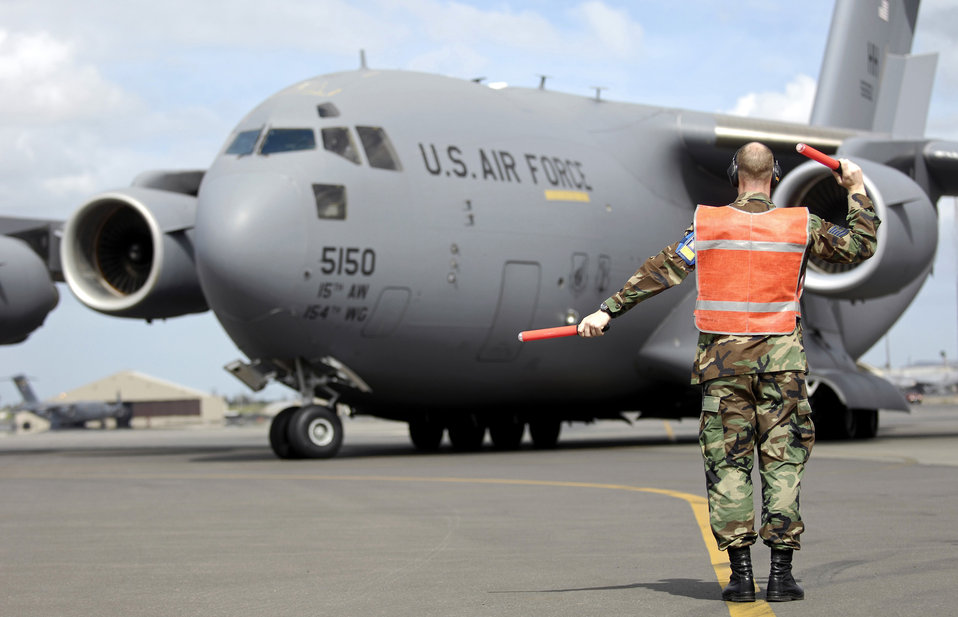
Hickam C-17 crews prep for Rodeo

Tech. Sgt. Brad Sufka marshals a C-17 Globemaster III from its parking spot at Hickam Air Force Base, Hawaii, on June 28. Sergeant Sufka is a crew chief from the 15th Aircraft Maintenance Squadron and is part of Hickam's Rodeo team. The team is practicing for the upcoming Air Mobility Command Rodeo at McChord AFB, Wash.